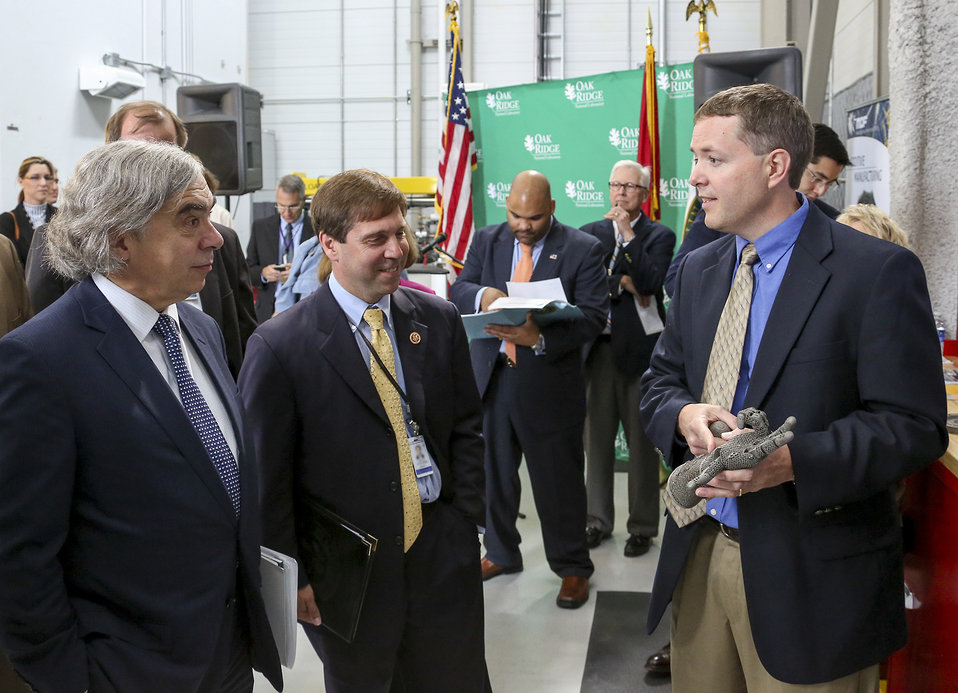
Secretary of Energy Ernest Moniz and Representative Chuck Fleischmann talk to Oak Ridge National Laboratory researcher Chad Duty about research in additive manufacturing at the Spallation Neutron Source during a tour on June 3, 2013.